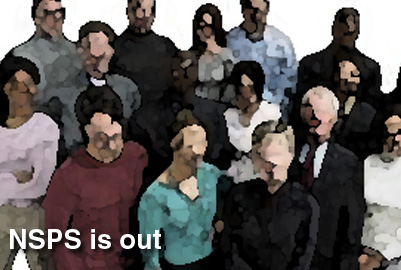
NSPS is out

The president's signing of the 2010 National Defense Authorization Act Oct. 28, 2009, has ended the controversial pay-for-performance National Security Personnel System, affecting some 220,000 Defense Department employees.